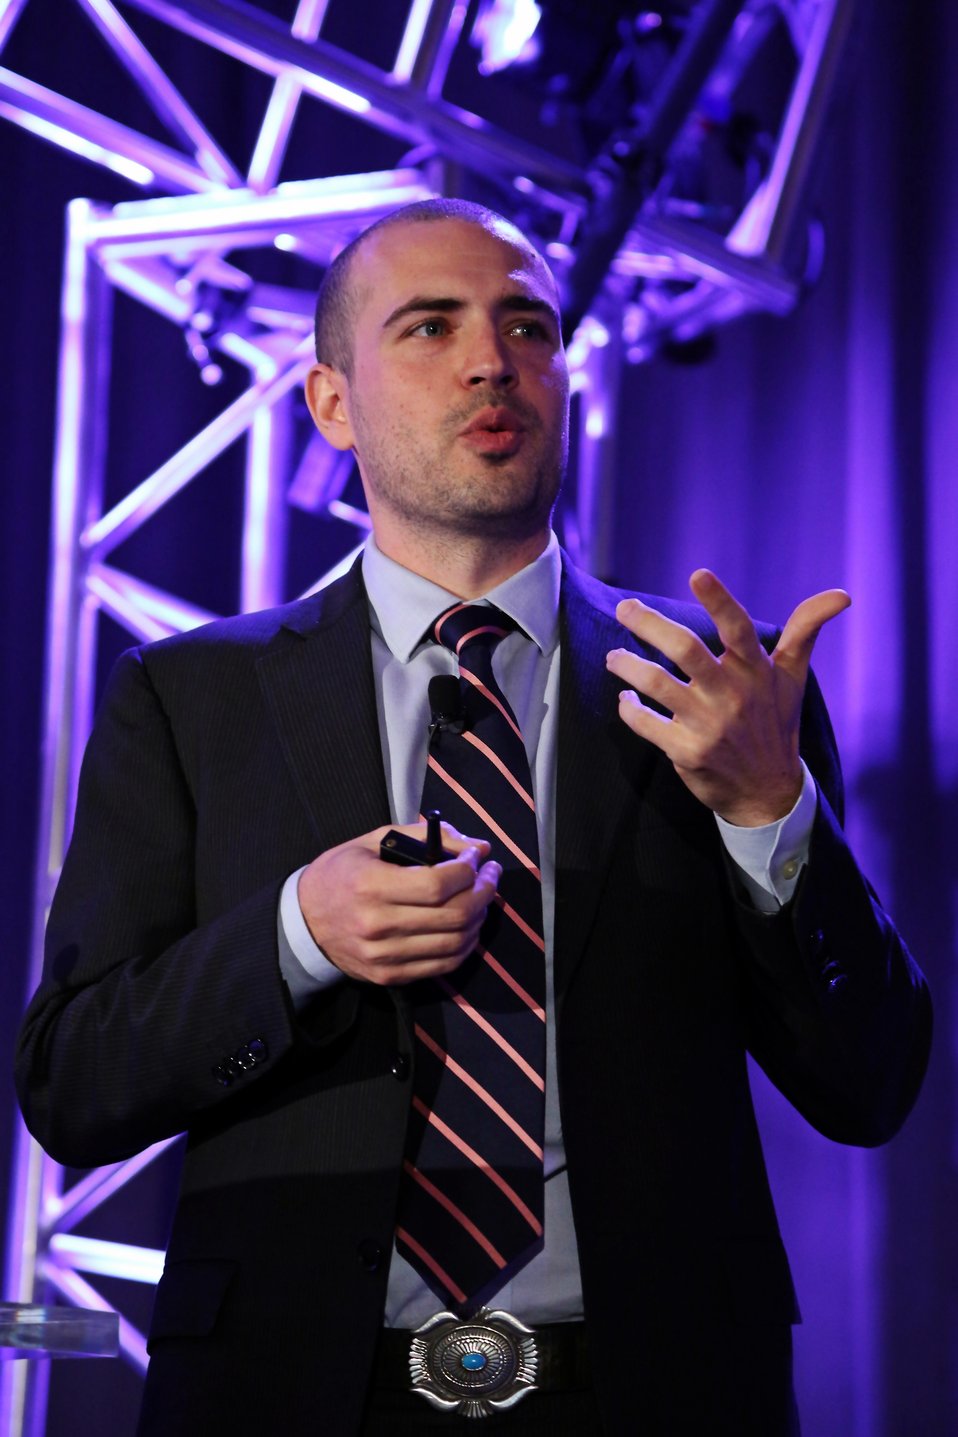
Day 2 Keynote Session 21

Mosaic's Founder and President Billy Parish, gives a keynote.